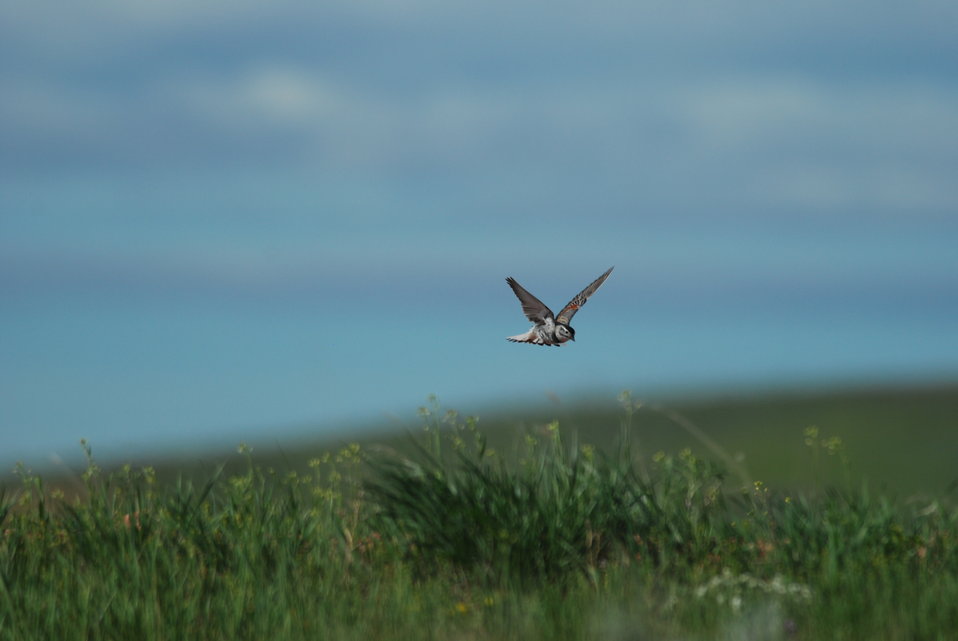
McCown's Longspur overground at Durham, Canada. Supported by the Neotropical Migratory Bird Conservation Act. Credit: WCS

Note: This photo was taken in Canada. Flickr geolocation point is incorrect. Specific location unknown.